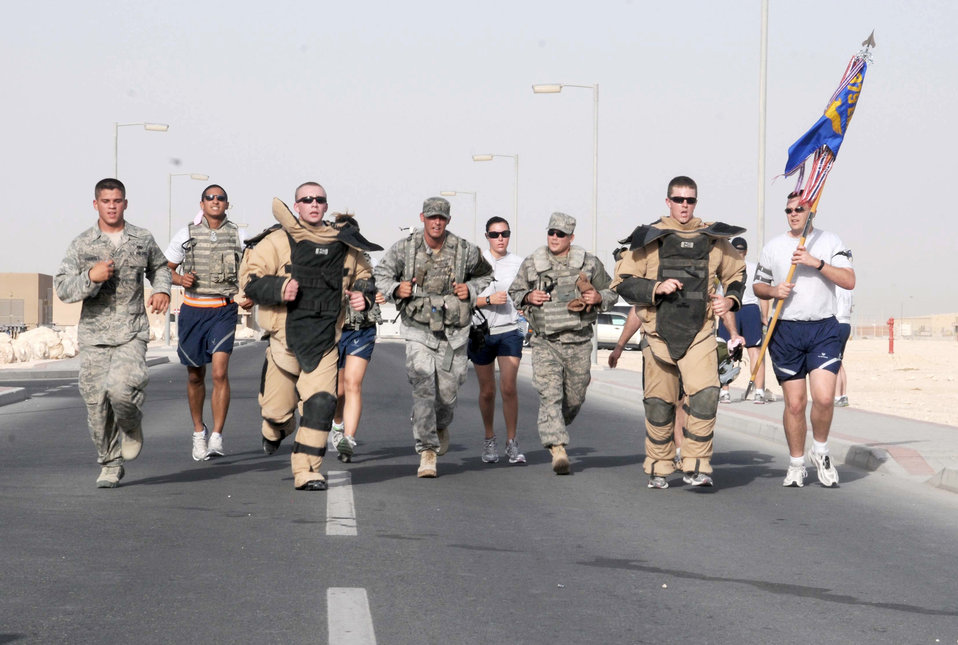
Airmen run to honor EOD fallen, injured

U.S. service members participate in a 5 km run hosted by the 379th Expeditionary Civil Engineering Squadron Explosive Ordnance Disposal team May 7, 2011, at an airbase in Southwest Asia. Many service members came to participate or cheer on the runners.